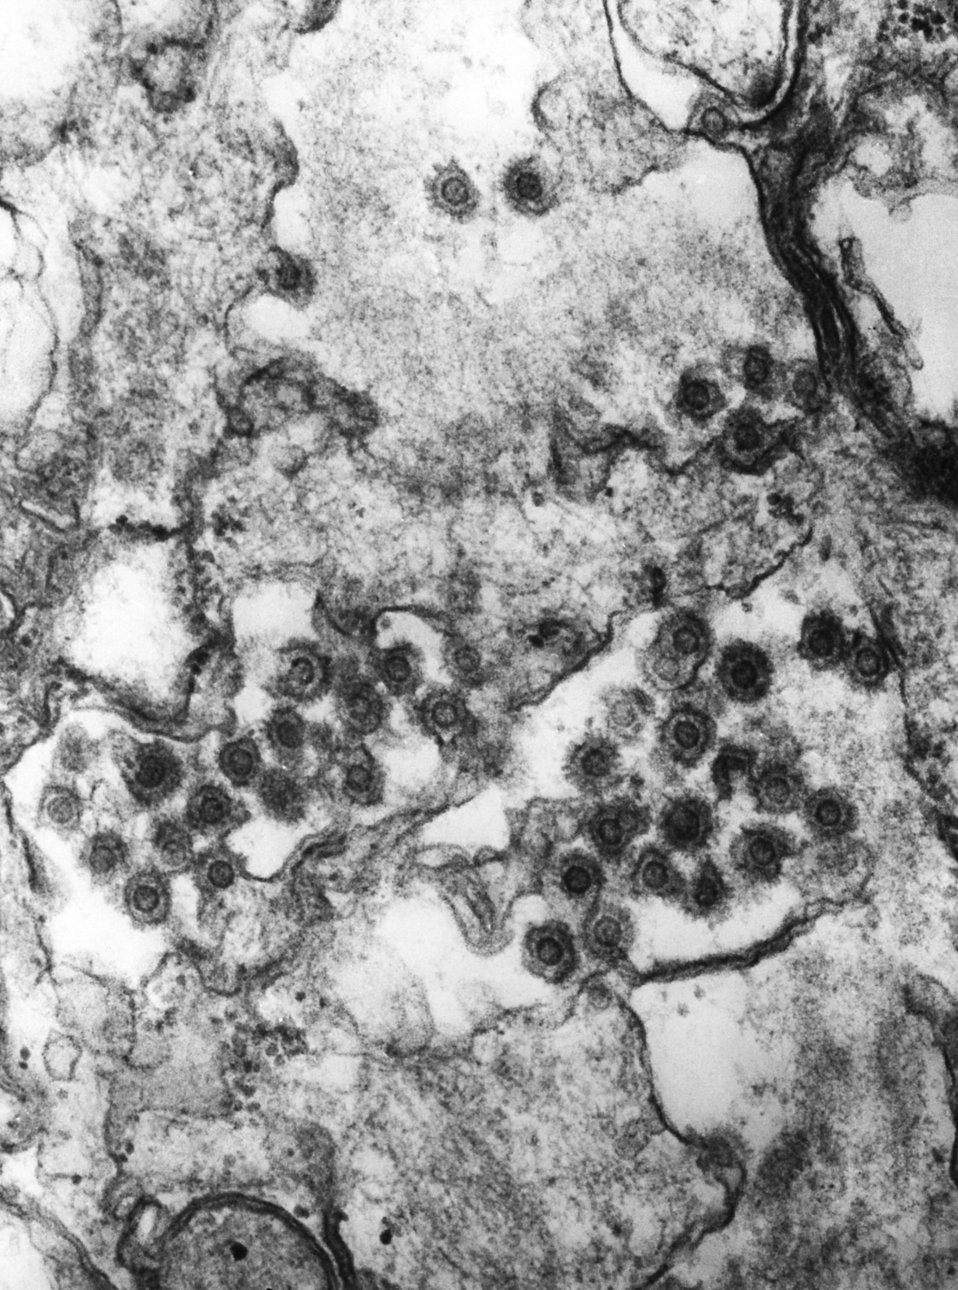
This negatively-stained transmission electron micrograph (TEM) revealed the presence of numerous doulble-stranded, full-length DNA-containing (dsDNA) spumavirus, or foamyvirus virions. One of the identifying morphologic characteristics displayed by these virions is the spikey nature of their protective proteinaceous capsid, which is a feature evident in this TEM.